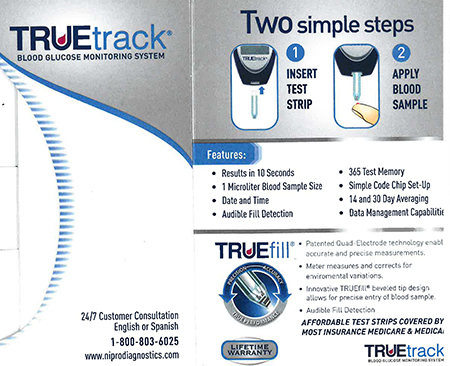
RECALLED – Blood Glucose Meters

January 2, 2014 – Product Recall – Nipro Diagnostics, Inc. Initiates Voluntary Recall of Certain TRUEbalance and TRUEtrack Blood Glucose Meters.